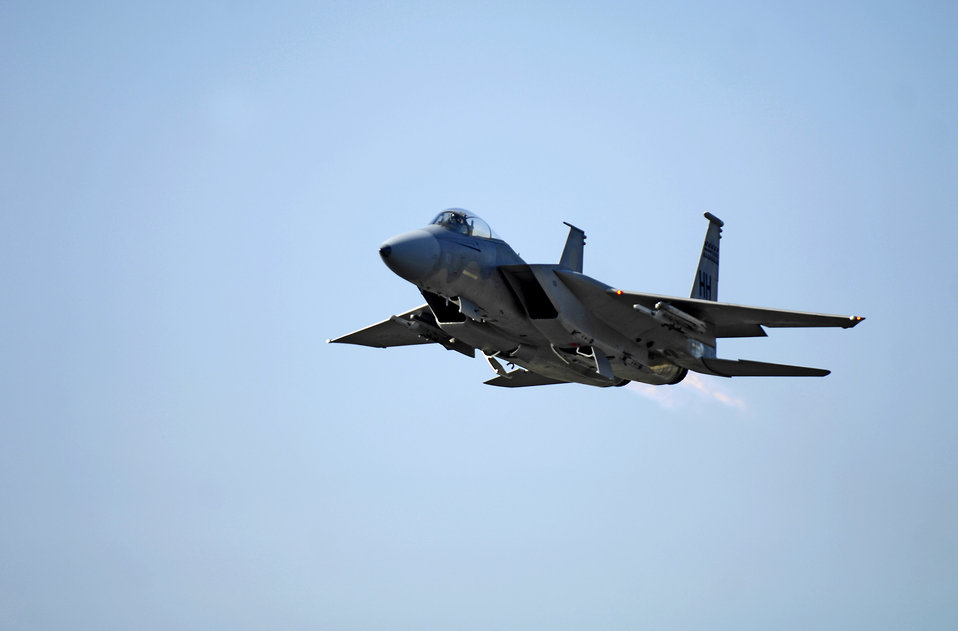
Eagles soar again

An F-15 Eagle takes off Jan. 9 from Hickam Air Force Base, Hawaii. The F-15s, from the 199th Fighter Squadron of the Hawaii Air National Guard, have not flown since Air Force officials grounded the F-15 fleet Nov. 3, 2007. Air Combat Command officials cleared a portion of its F-15 A through D models to begin flying Jan. 9.